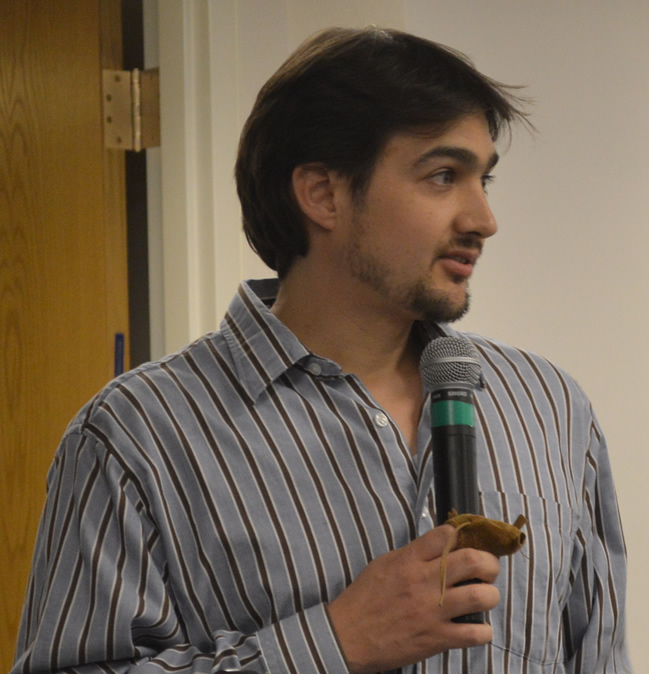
Regional Director Steve Guertin Moves on to Senior Leadership Position

On November 1, 2012, USFWS Mountain-Prairie Regional Director, Steve Guertin, served his last day as Regional Director before moving on to a senior leadership position at Headquarters.

Regional leadership and partners shared their memories of Steve's outstanding leadership and his unique ability to leverage his outstanding technical skills while maintaining a very personable persona - all amidst a variety of challenging issues.